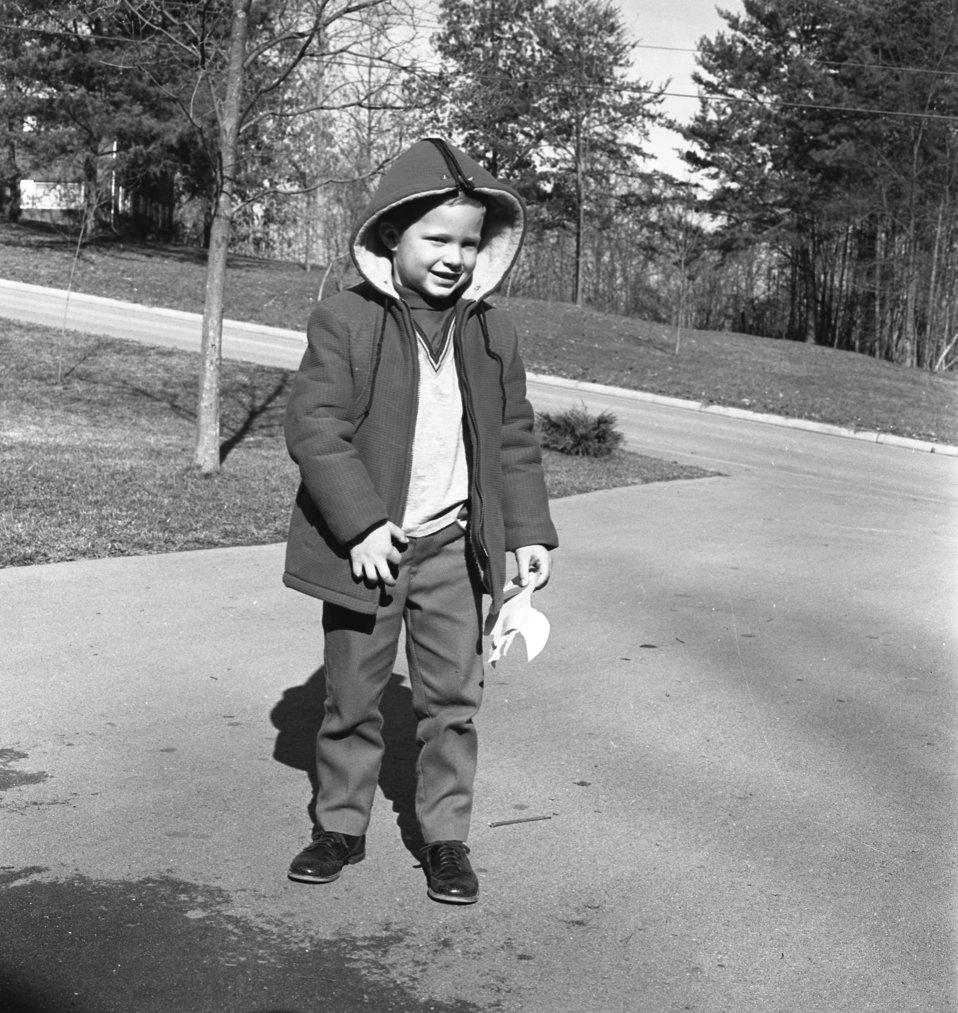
Young student waiting on School Bus Oak Ridge 1968

68-588 DOE photo Frank Hoffman 11-1968 Oak Ridge Tennessee